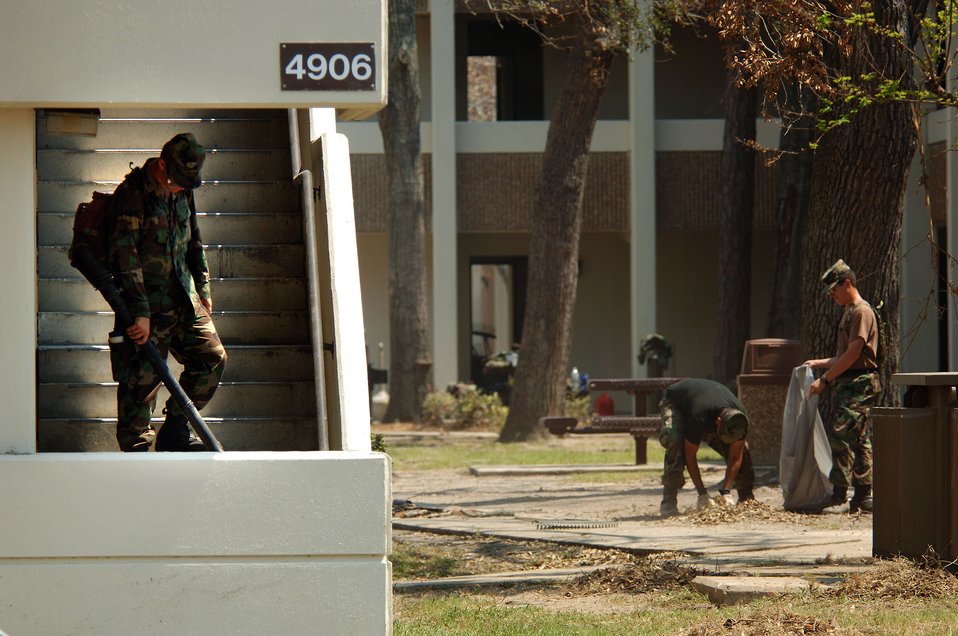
Keesler commander: Don't count us out

KEESLER AIR FORCE BASE, Miss. -- With training operations suspended, Airmen do their part to clear the base of debris left in the wake of Hurricane Katrina's destructive path. With the help of more than 400 volunteers and Red Horse civil engineers, the base has begun to resemble how it looked before the storm.